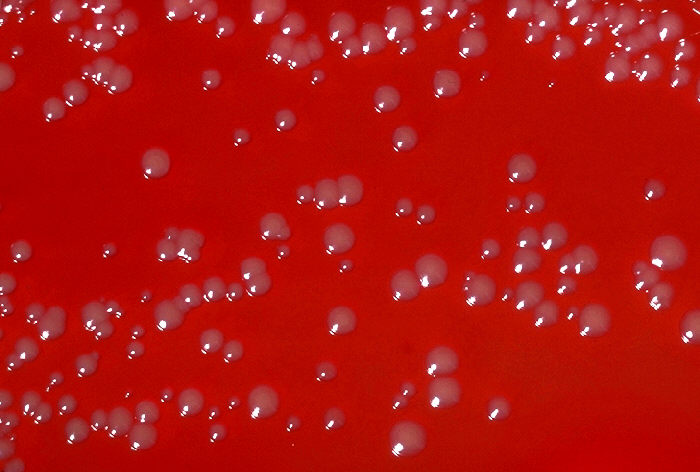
Blood agar plate culture of Corynebacterium haemolyticum.